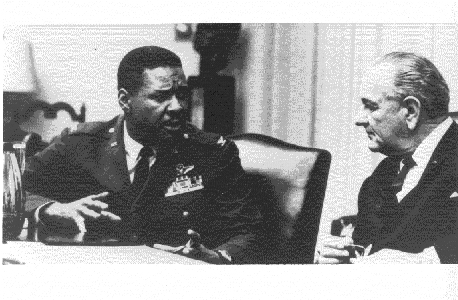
Daniel 'Chappie' James Jr.

Daniel